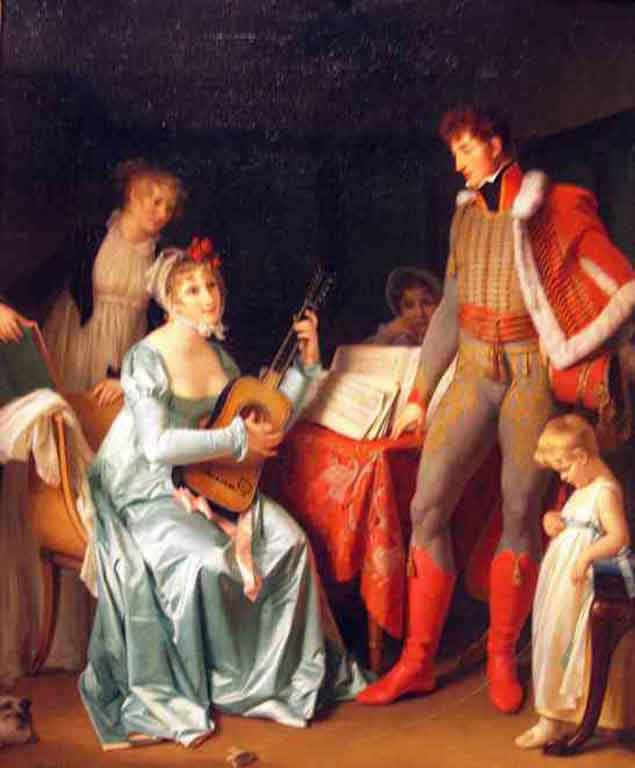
'Le Hussard en Famille', oil on canvas painting by Marguerite Gérard, c. 1800, Denver Art Museum